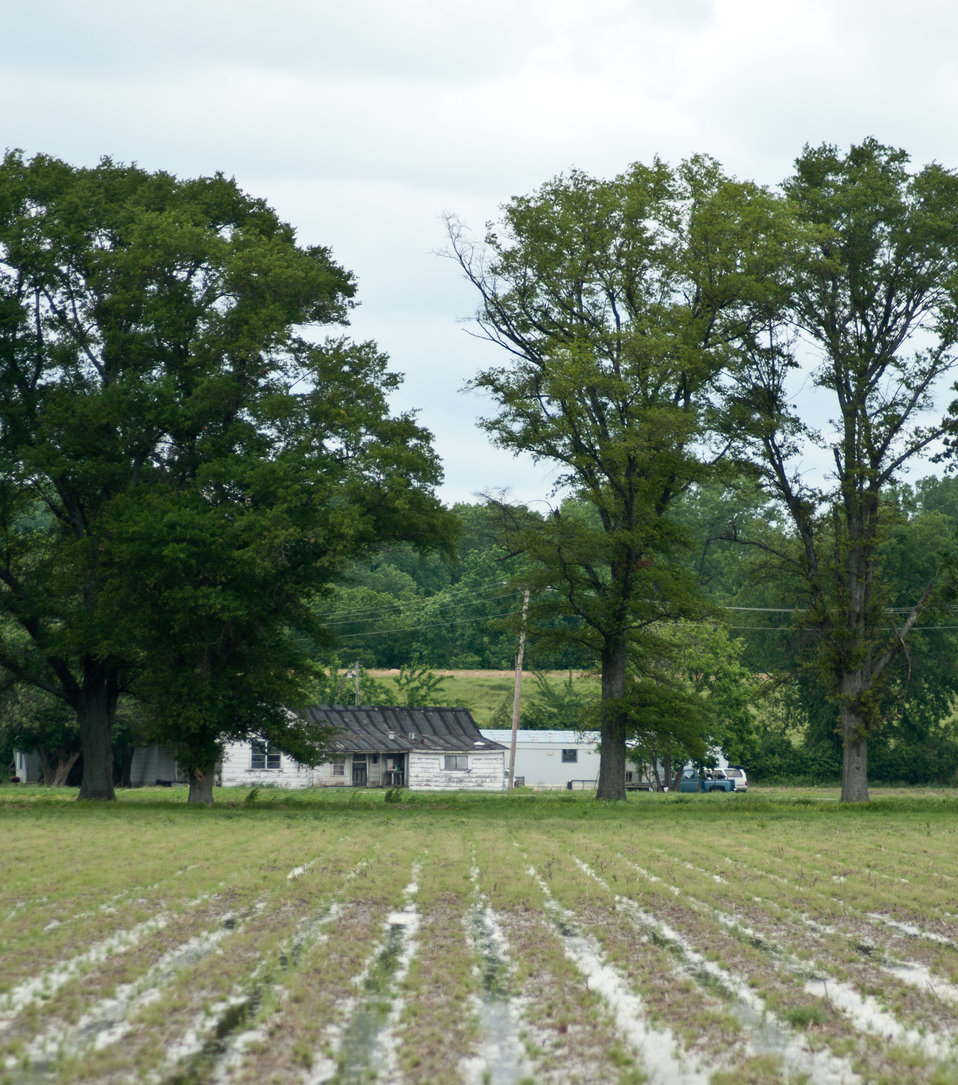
Floods waters from Mississippi River inundated casinos and farms that surround Tunica, MS, on Sunday, May 15. 2011.